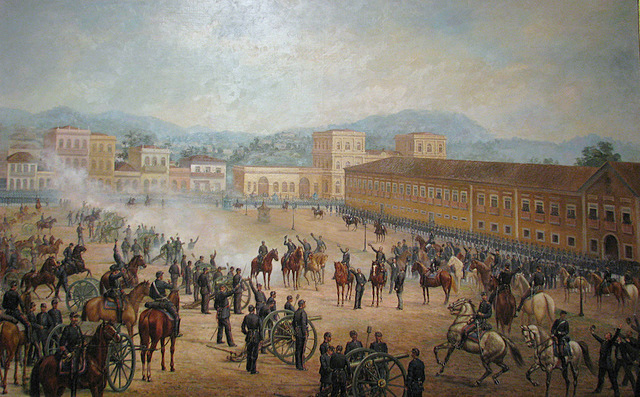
Benedito Calixto - Proclamação da República, 1893